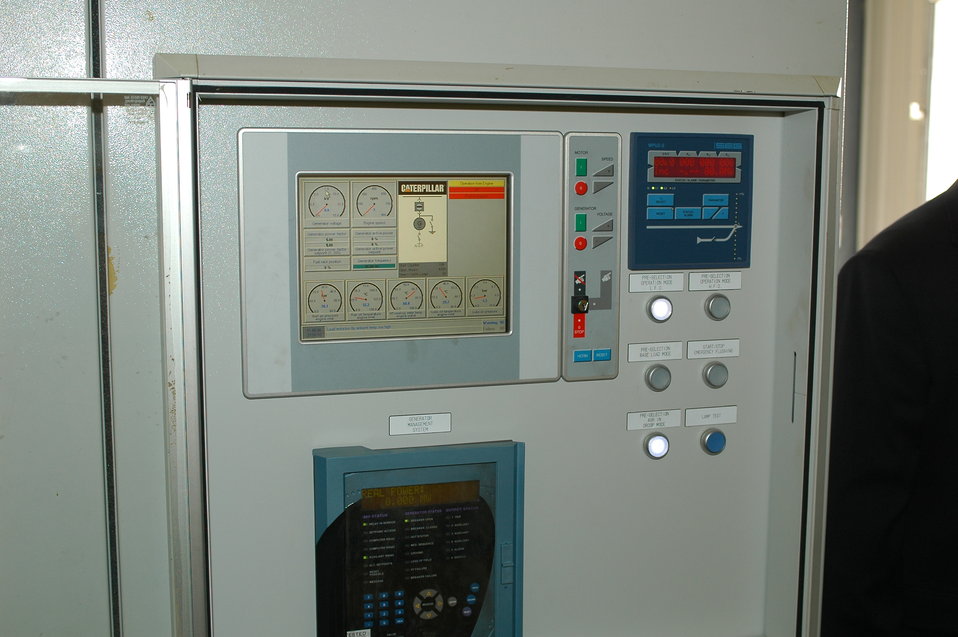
105 MW Tarakhil Power Plant Handover